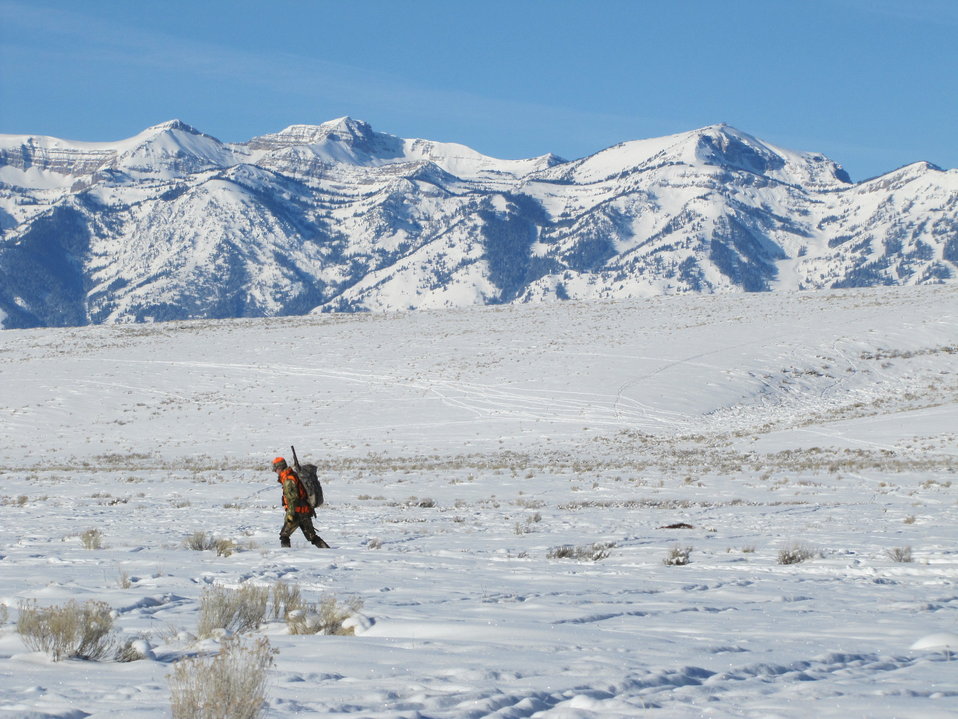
Coming in from the Cold

The National Elk Refuge offers hunting opportunities for both bison and elk. The hunting program is an important tool to manage the size of the herds wintering on the refuge.